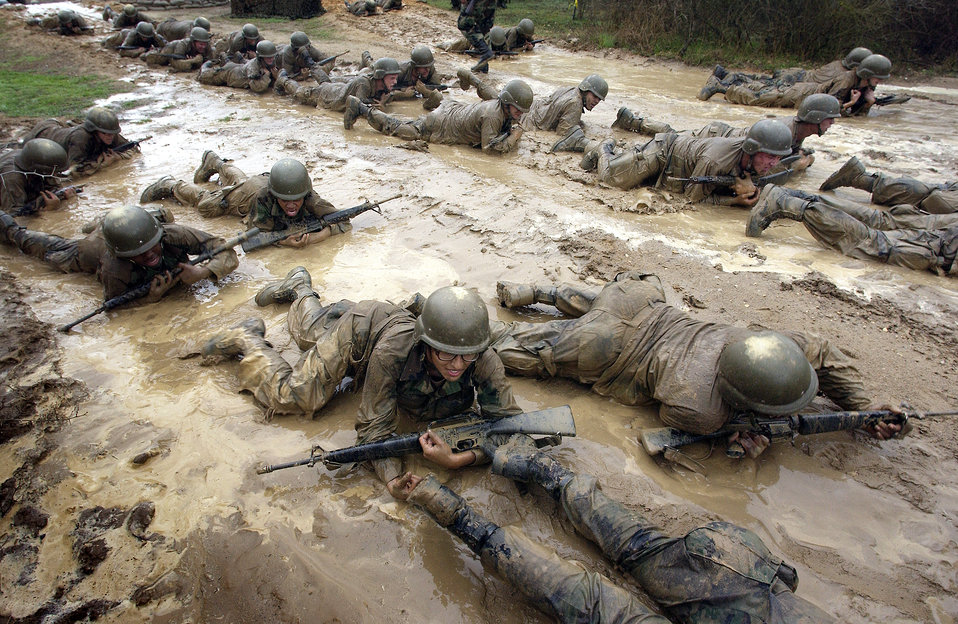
Mud warriors

LACKLAND AIR FORCE BASE, Texas -- Basic trainees crawl through muddy obstacles as they attempt to navigate the combat tactics course at Warrior Week's training ground here. The training during Warrior Week prepares trainees for the possibility of worldwide deployment almost immediately upon arrival at their first duty station. The trainees are in their fifth week of training and are one week away from graduation.